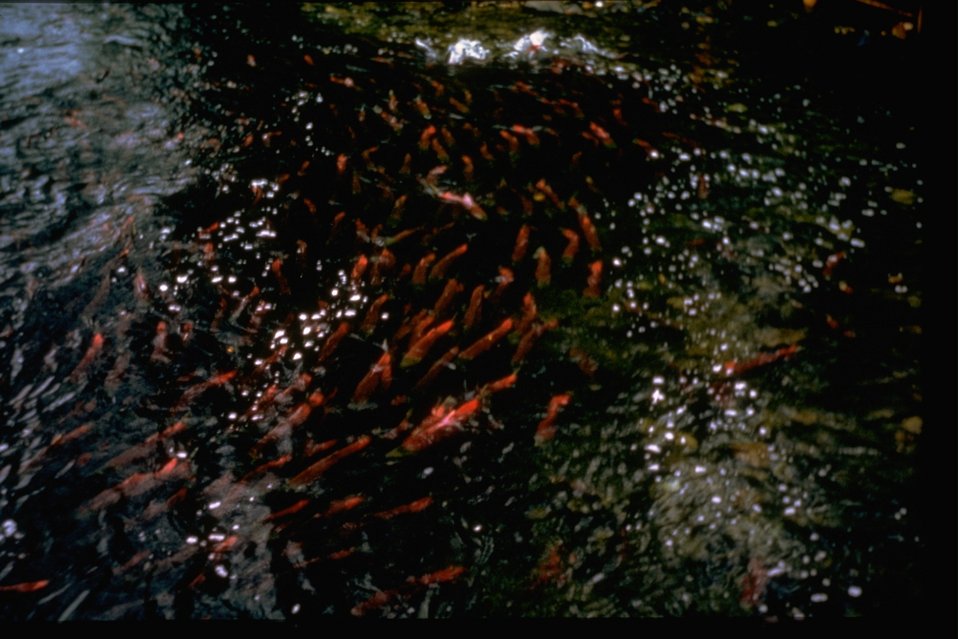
Many Kokanee Salmon swimming in river.